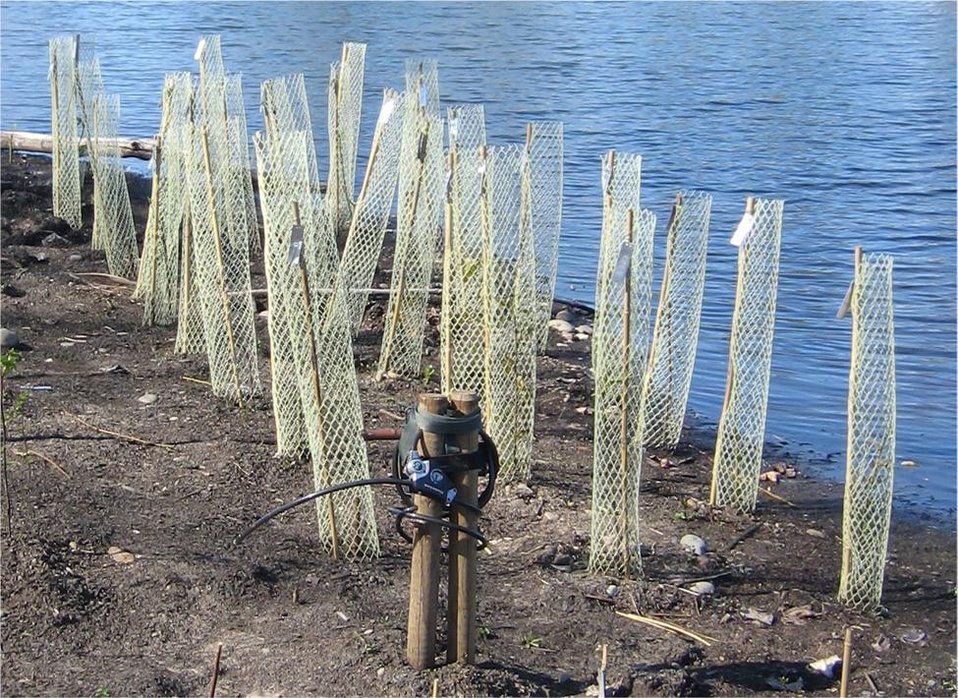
The nutria harms riparian and wetland habitats worldwide. In collaboration with Portland State University and the U.S. Geological Survey, the U.S. Department of Agriculture's (USDA) Animal Plant Health and Inspection Service (APHIS) Wildlife Services (WS) researchers evaluated the effectiveness of standard Vexar plastic mesh tubes in reducing nutria damage to newly planted trees and shrubs. All the plantings with tubes survived compared to only 17 percent of plantings without tubes. The use of such barriers may help in wetland restoration efforts.